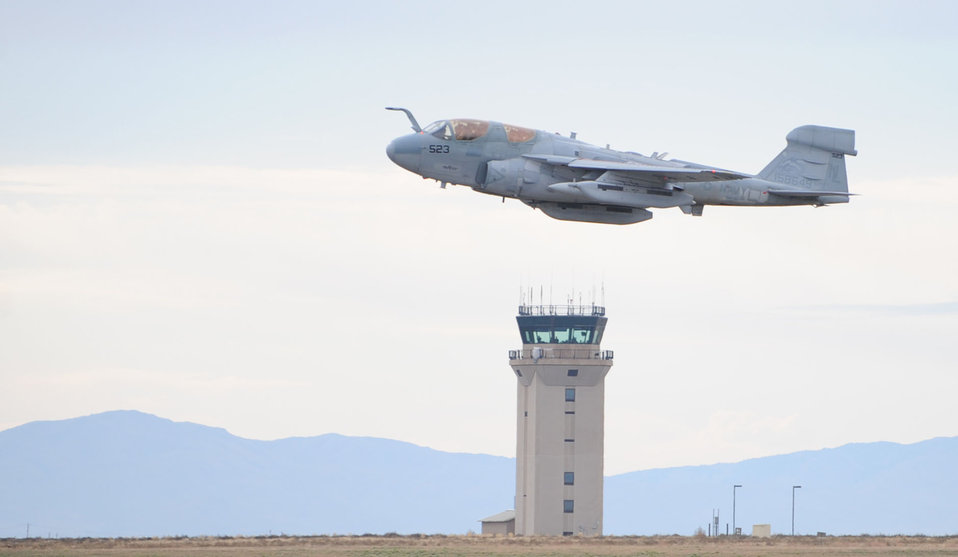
Exercise Mountain Roundup

An EA-6B Prowler from Electronic Attack Squadron 142 at Whidbey Island Naval Air Station, Wash., takes off for a training mission Oct. 21, 2009, during the Mountain Roundup exercise at Mountain Home Air Force Base, Idaho. Mountain Roundup is a large-force exercise running from Oct. 15 through Oct. 30 and includes participants from the German air force, U.S. Air Force, U.S. Navy and U.S. Marines.